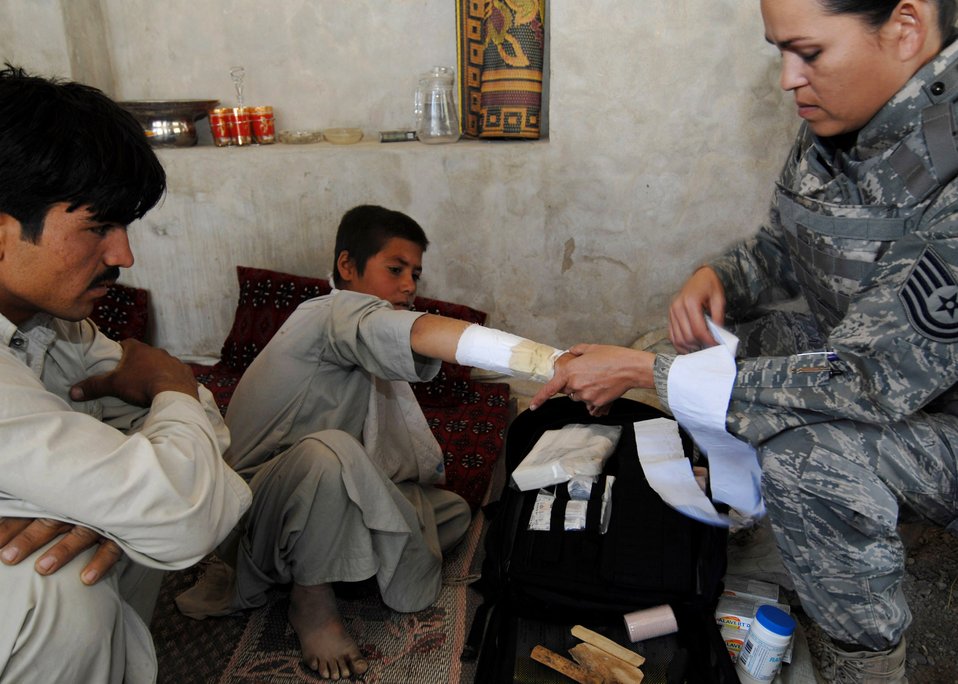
Humanitarian medical care

Tech. Sgt. Joy Flumerfelt removes a makeshift splint from a boy's broken arm near Bagram Air Base, Afghanistan, Oct. 4. His arm was then evaluated and resplinted with better materials during a Medical Civil Action Project in a village outside of Bagram. Sergeant Flumerfelt is a an independent duty medical technician with the 336th Expeditionary Fighter Squadron.